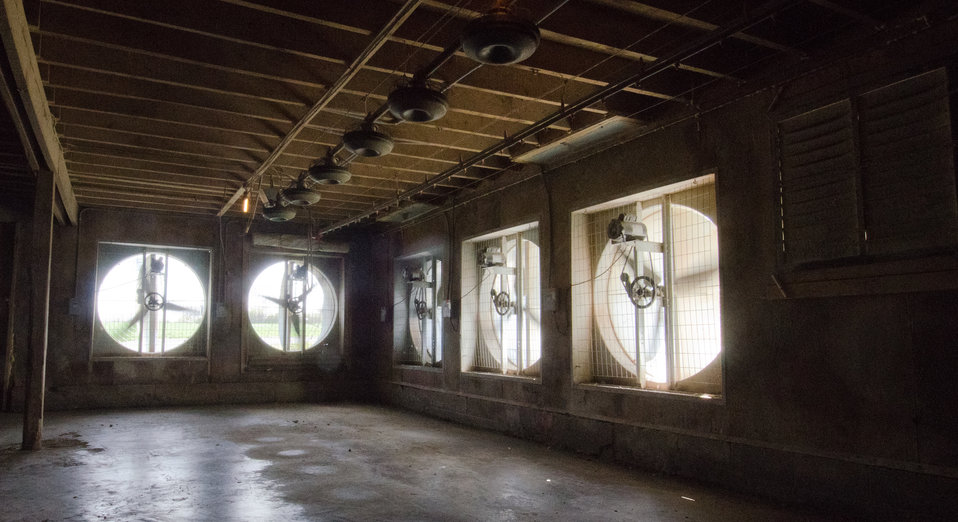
Tunnel ventilation fans are big, but are designed to move large volumes of air at safe gentle rates of approximately 4 miles per hour. When occupied, 20,000 chickens will live on this floor in this chicken house. Roxanne and Matthew Molnar have an 80,000 poultry farm on April 21, 2011, in Grantville, PA and were recipients of a $20,000 Rural Energy for America Program (REAP) grant. The money is a portion of the cost to modernize the second of two 40,000 chicken capacity chicken houses.
Roxanne Molnar and her husband Mathew have an 80,000 chicken farm in Grantville, PA, and were recipients of a $20,000 Rural Energy for America Program (REAP) grant. Her oversized coat and wind blown hair are standard for this American poultry farmer, wife and mother of two boys, on Thursday, April 21, 2011. The grant money is a portion of the cost it took the Molnar’s to modernize the second of two 40,000 chicken capacity chicken houses. Chickens need to be kept at a comfortable temperature to remain productive. New radiant heaters keep the chickens warm during Pennsylvania winters. On warm days, ceiling vents provide passive venting of heat out of the building; when chicken house temperatures are estimated to be above 90 degrees, fans come on, pulling air through water evaporator elements lowering air temperature down 10-15 degrees and flows along the chicken house's length, in effect a tunnel of cooled air. The benefits to the chickens are heat and excess moisture removal; minimized dust and odor; limits buildup of ammonia and carbon dioxide; and provides oxygen for respiration. All these systems are computer controlled allowing owner, Roxanne Molnar to run the farm by herself and raise two small boys Gavin (2) and Grant (5). Husband, Matthew works off the farm and frequently travels, so along with the demands of parenting and manually controlling fans, vents, and having to remove the 80,000 chickens from their feeders and moving them around to cool them was an increasingly daunting task. The computer controls of the new system automate many of the daylong tasks allowing the Molnar’s to run their family farm. USDA Photography by Lance Cheung.